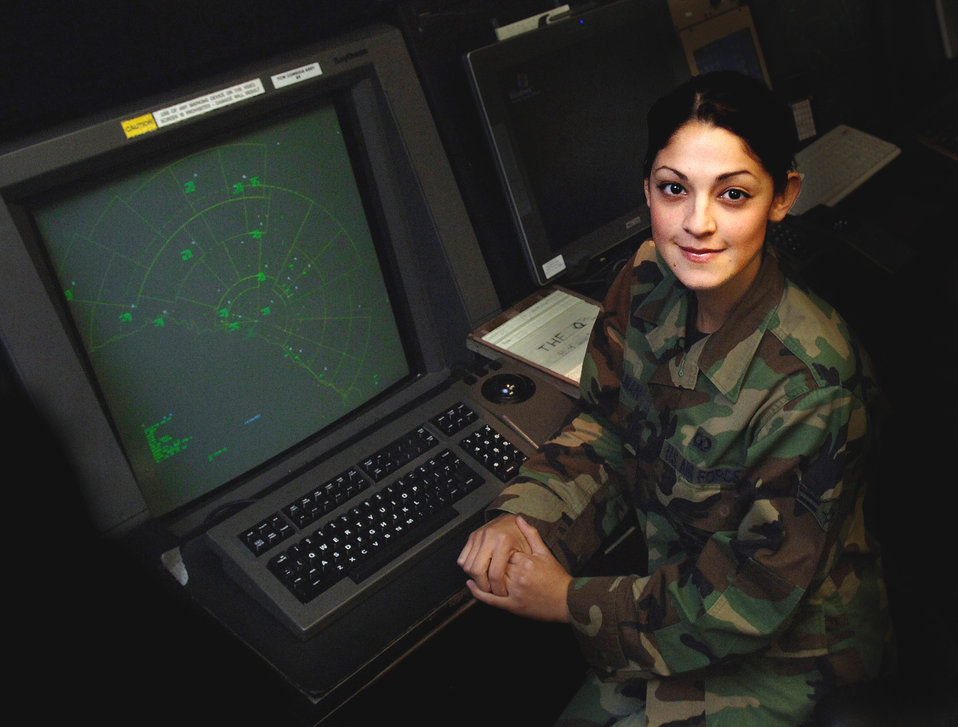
Air traffic controller considers Air Force her second family

Airman 1st Class Stormi Samantha Gilman sits in front of her radar console at Laughlin Air Force Base, Texas. Airman Gilman is an air traffic controller with the 47th Operations Support Squadron.